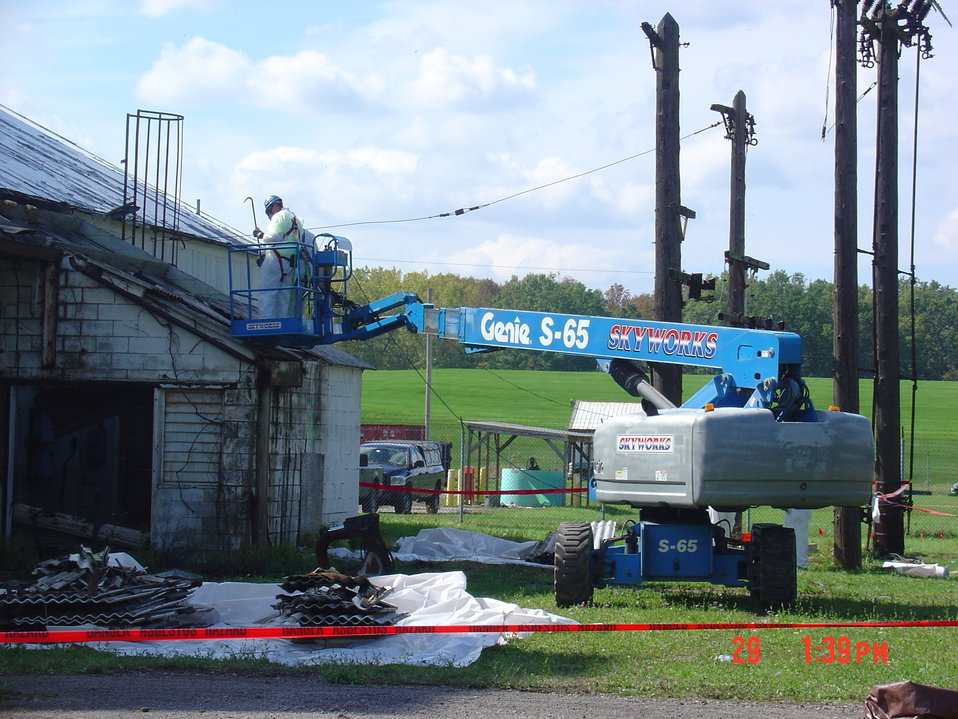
NFSS 401 asbestos removal.
Activities from the Niagara Falls Storage Site, which is associated with the former Lake Ontario Ordnance Works. Formerly Utilized Sites Remedial Action Program (FUSRAP), a program initiated in 1974 to identify, investigate and clean up or control sites that were part of the Nation's early atomic energy and weapons program. Activities at the sites that are eligible for FUSRAP were conducted by Manhattan Engineer District (MED) or the Atomic Energy Commission (AEC), both predecessors of the Department of Energy (DOE). The U.S. Army Corps of Engineers was assigned management of FUSRAP by Congress in 1997.